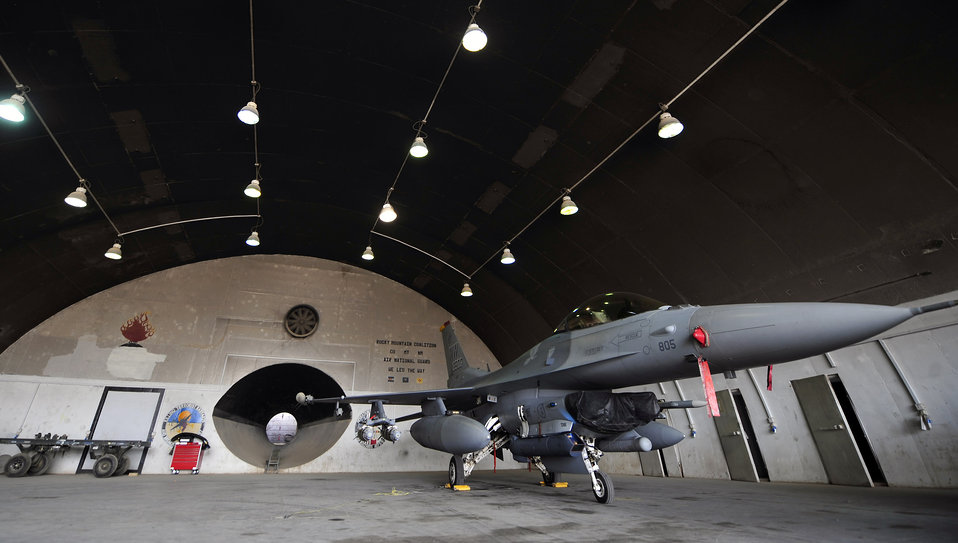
Airmen support Iraqi elections, see history in making

An F-16 Fighting Falcon stands ready to take to the sky in support of the 2009 Iraqi provincial elections Jan. 30 at Joint Base Balad, Iraq. Members of the 332nd Air Expeditionary Wing are engaged in providing airpower in support of the government of Iraq as it conducts this historical election. In all, more than 14,000 candidates, including more than 4,000 women, are running for approximately 440 provincial council seats.